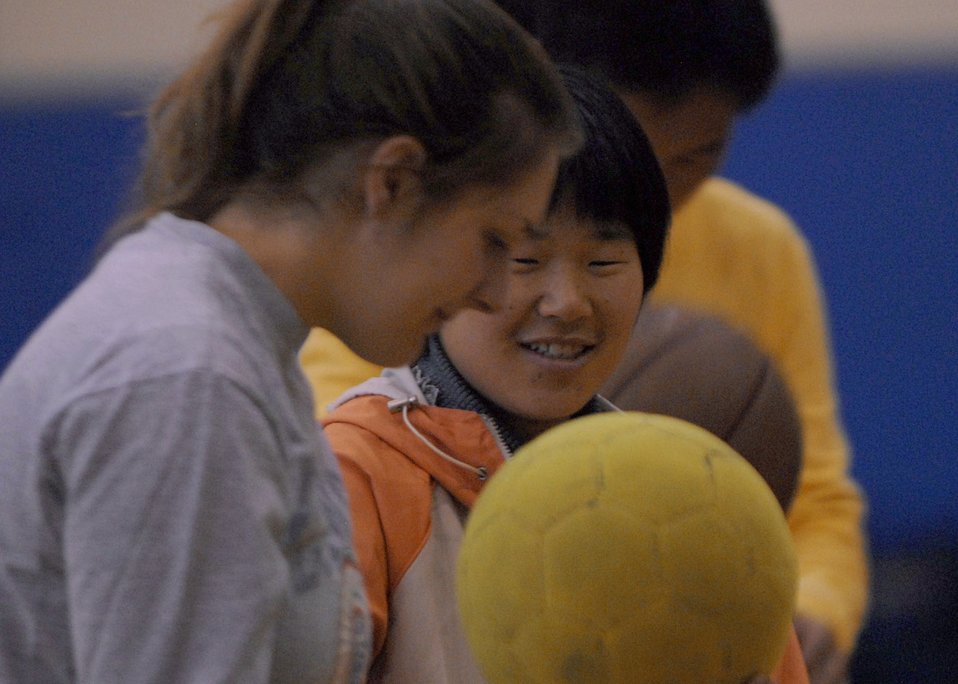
Kunsan Airmen show Thanksgiving spirit with South Koreans

Senior Airman Lindsay DeReadt interacts with a young girl at the fitness center Nov. 10 at Kunsan Air Base, South Korea. Airmen held a day of games and food for the local nationals. The good neighbor program is designed for the base to actively engage with the local community to strengthen ties. Airman DeReadt is a 8th Communications Squadron military postal clerk.